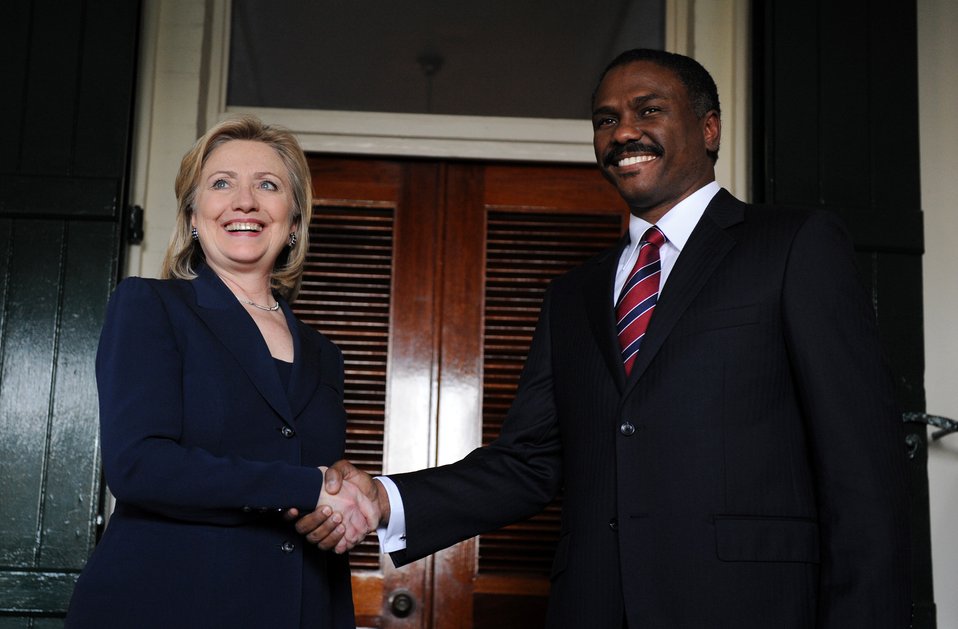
Secretary Clinton Meets With Haitian Presidential Candidate Celestin

USAID Secretary of State Hillary Clinton meets with Haitian Presidential Candidate Jude Celestin on January 30, 2011, in Port-au-Prince, Haiti.